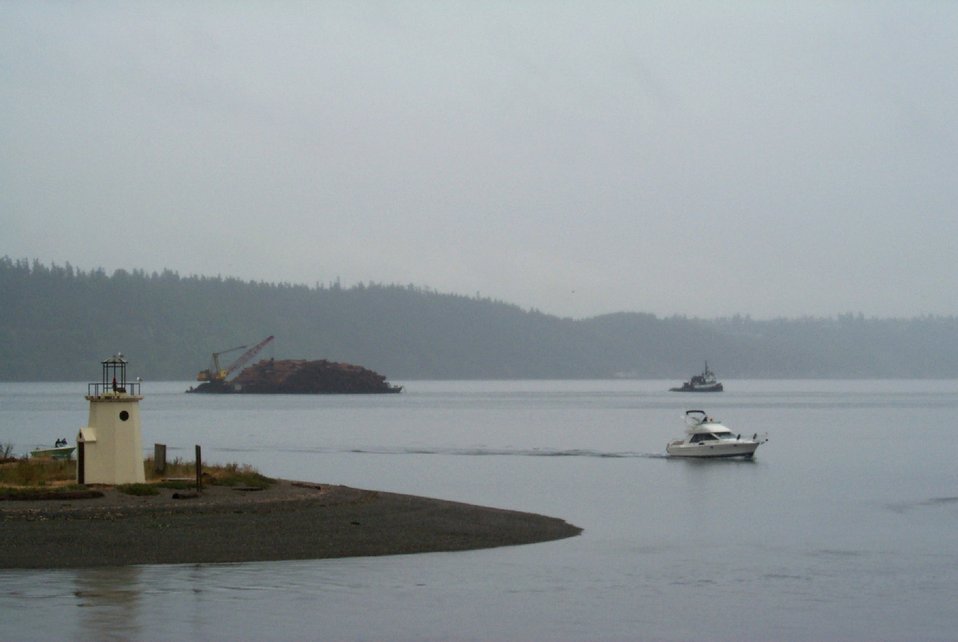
Looking past the spit at Gig Harbor to a barge-load of pine bark headed for to Steilacoom.